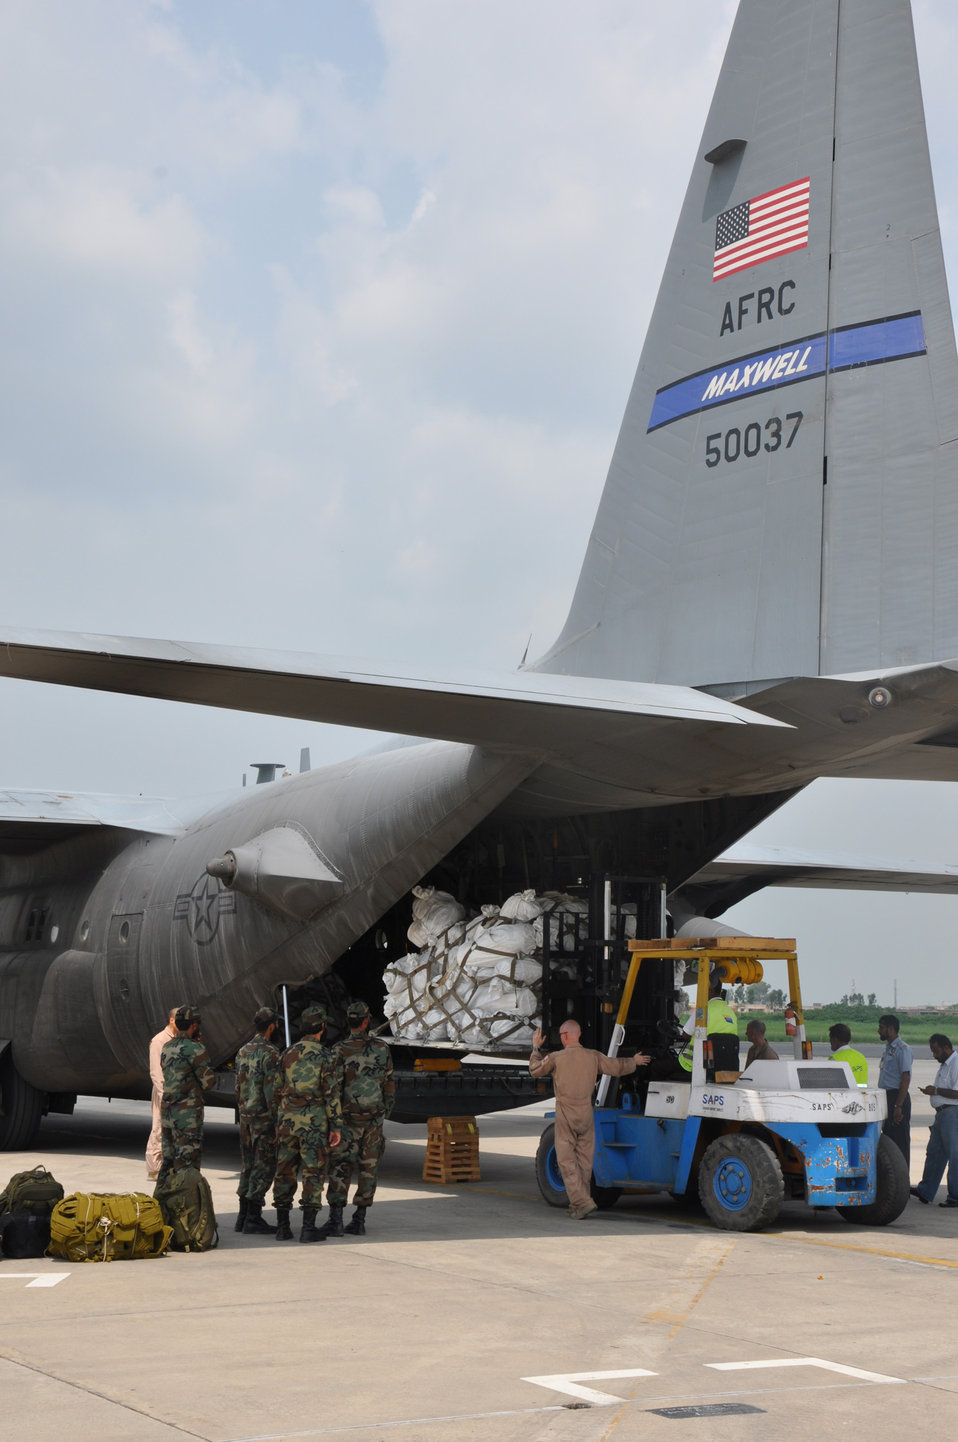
U.S. Cargo Plane Delivers Aid in Pakistan

A U.S. Air Force loadmaster guides a forklift carrying international aid destined for Pakistani flood victims onto a U.S. Air Force C-130 cargo aircraft at Pakistan Air Force Base Chaklala, Rawalpindi, Pakistan August 18, 2010.